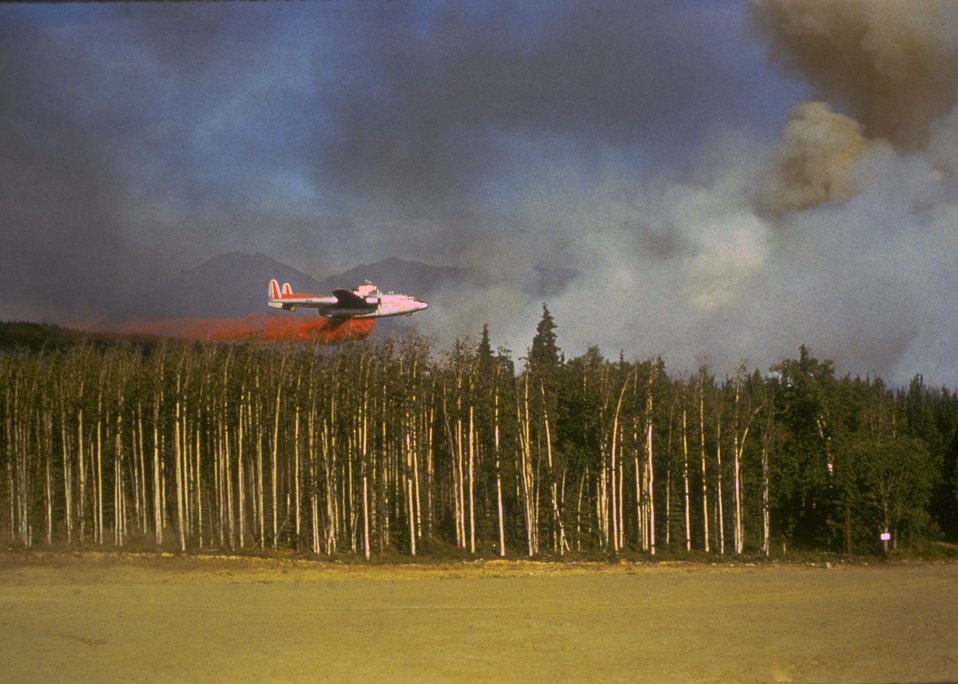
Fire retardant drop from an aircraft.